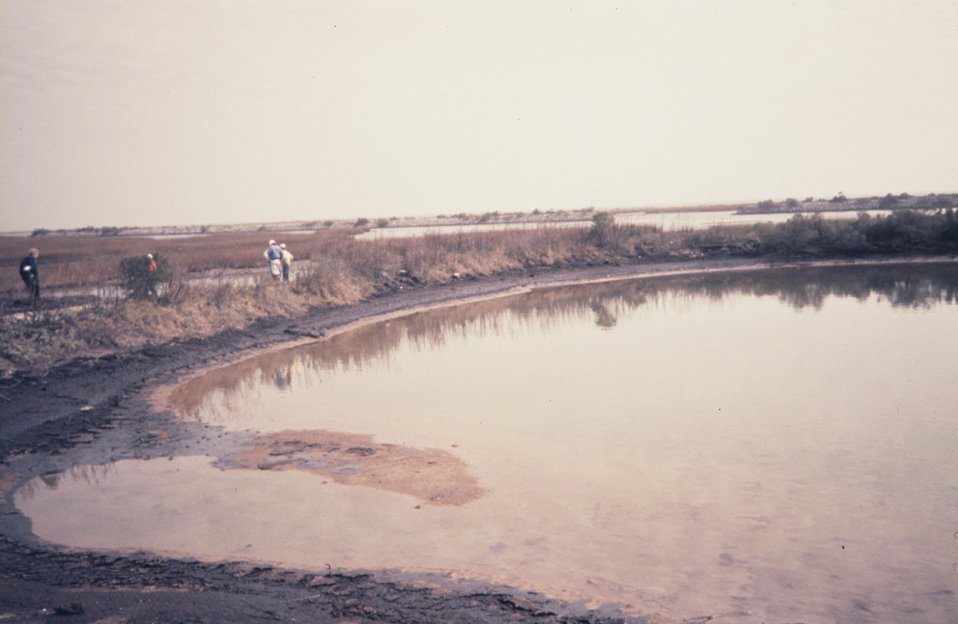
During restoration construction of the marsh platform, sediments being pumped into the cells created to contain the dredge material.